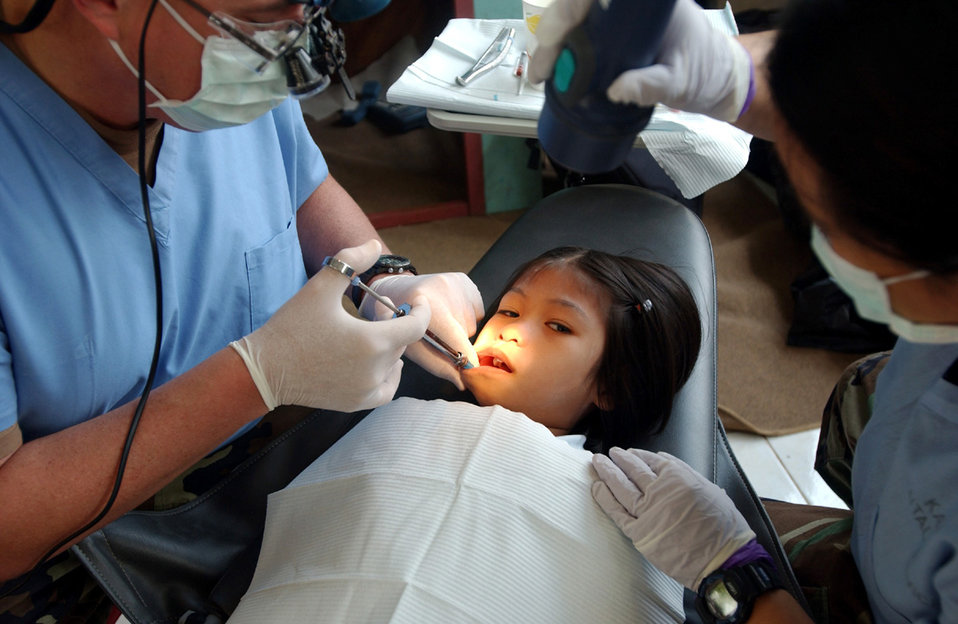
MEDCAP goes to Thailand

KORAT, Thailand -- Lt. Col. Steven Hyslop (left) prepares to extract a tooth from a Thai girl. A team of 20 U.S. physicians, dentists and medical technicians, here to conduct a medical and dental civic outreach program during Cope Tiger '04, treated more than 2,100 people during the three-day event. Colonel Hyslop is deployed here from Kadena Air Base, Japan.